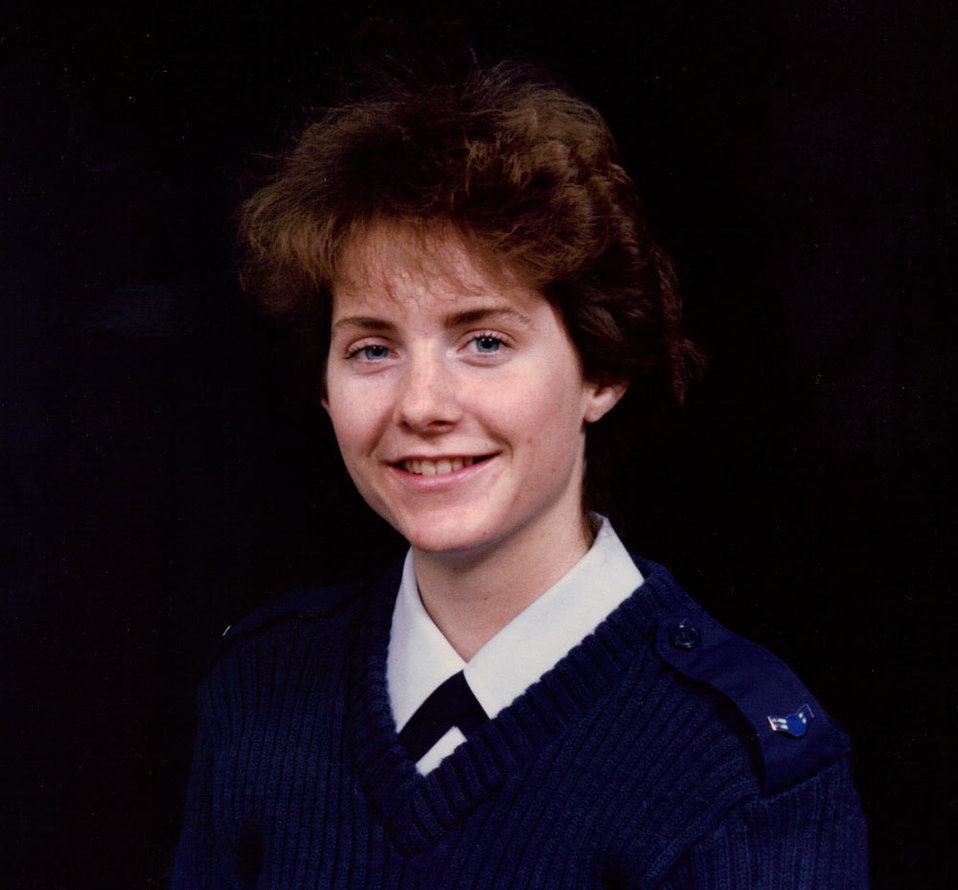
Sally Zodrow--Midwest Region

Sally Zodrow was an Airman First Class in the Air Force 1986-1991. She is now a Biological Science Technician at Sherburne National Wildlife Refuge in Minnesota.